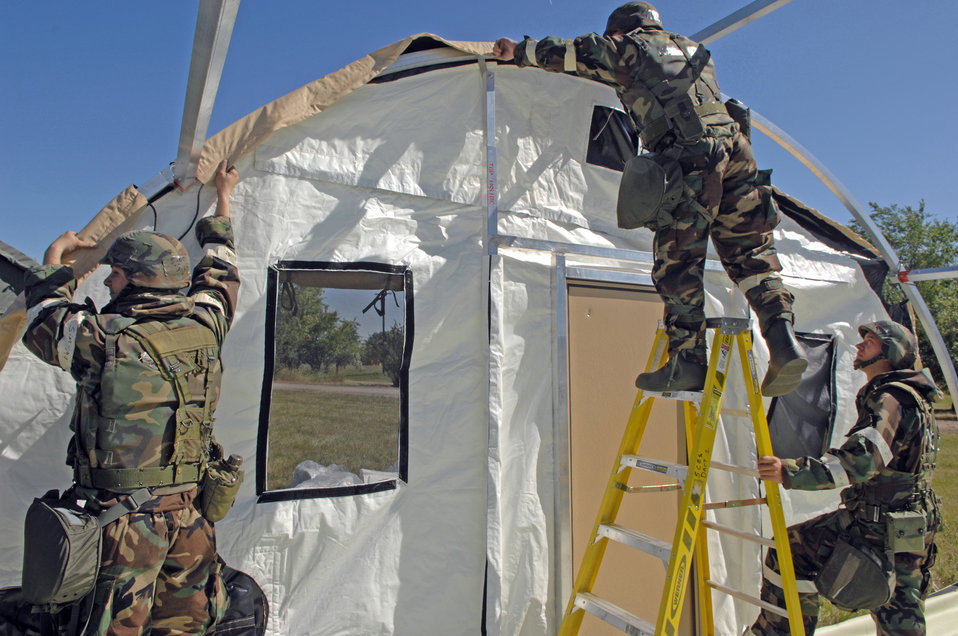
Need duct tape, now!

Airmen from the 5th Civil Engineer Squadron put together an